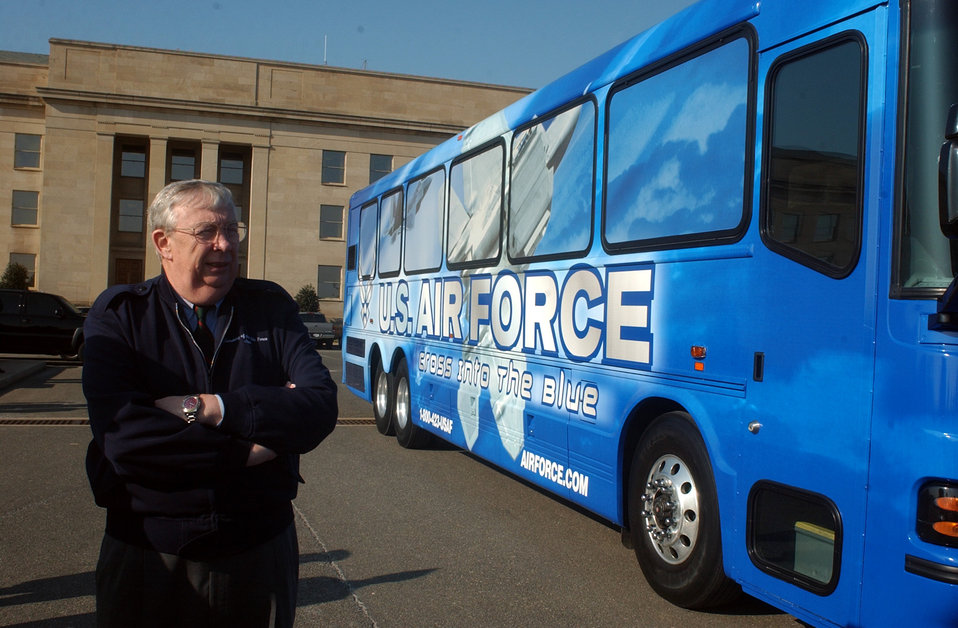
New bus design

WASHINGTON -- Secretary of the Air Force Dr. James G. Roche inspects the new bus design scheme at the Pentagon on Feb. 19. The new graphic design on the buses reflects the mission of the Air Force and demonstrates the diversity of careers in today's Air Force. There are a total of 10 buses in this test program. Four will operate from Bolling Air Force Base, D.C., and the other six will be at Randolph AFB, Texas; the U.S. Air Force Academy, Colo.; and Nellis AFB, Nev.